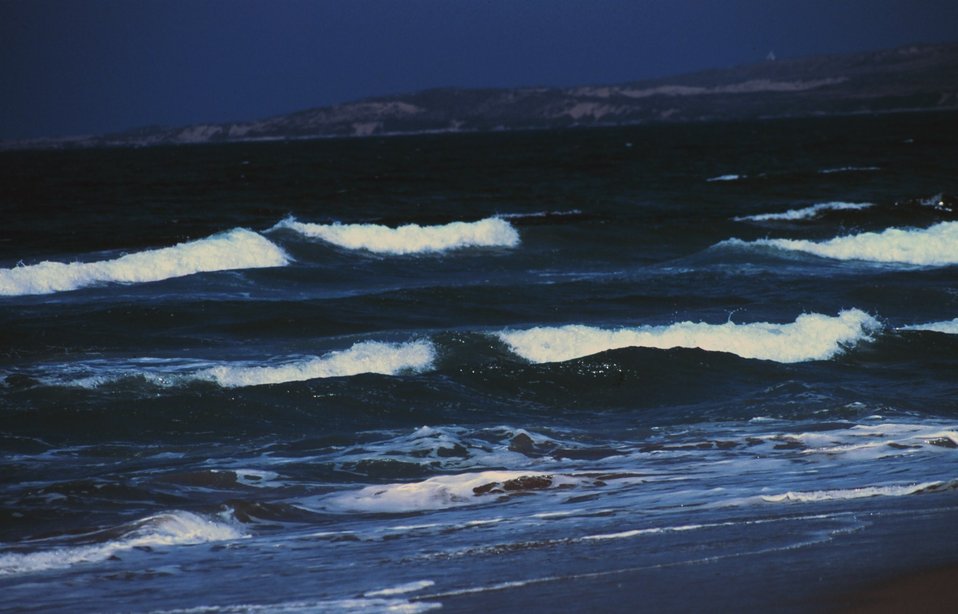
Surf rolling into the beach at aptly named Surf, California